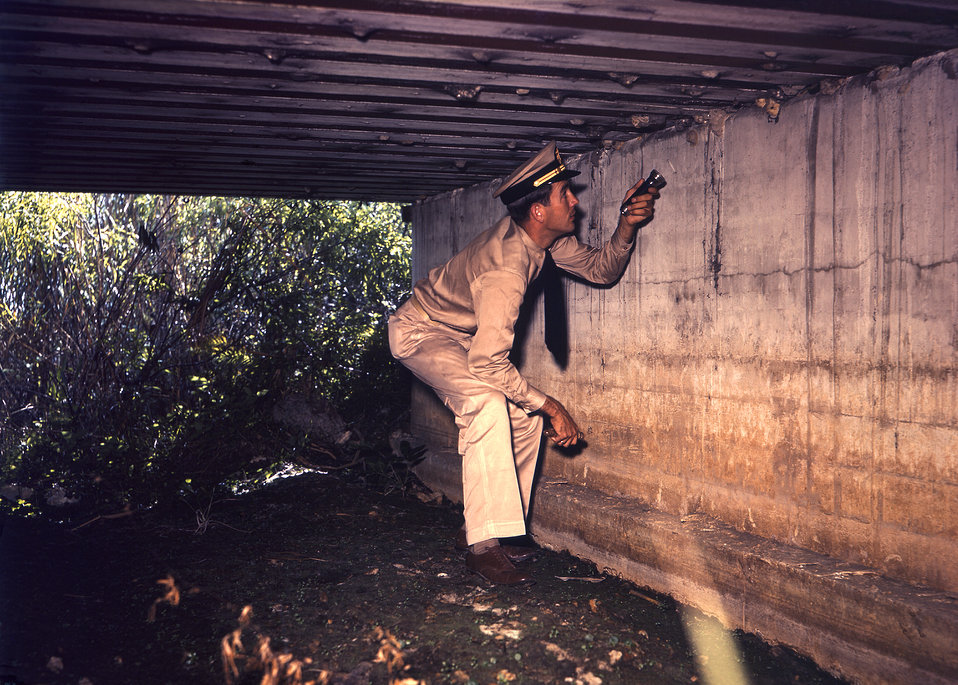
This 1960 photograph depicted a military investigator with a flashlight as he was carrying out an inspection beneath a bridge during a malaria control study.